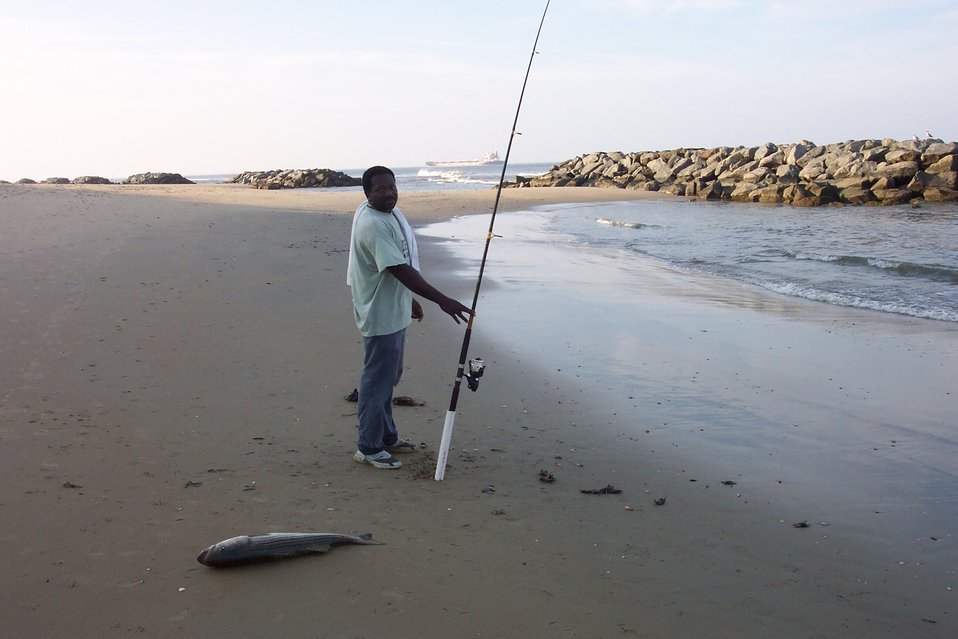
Fishing for striped bass at Cape Henry.